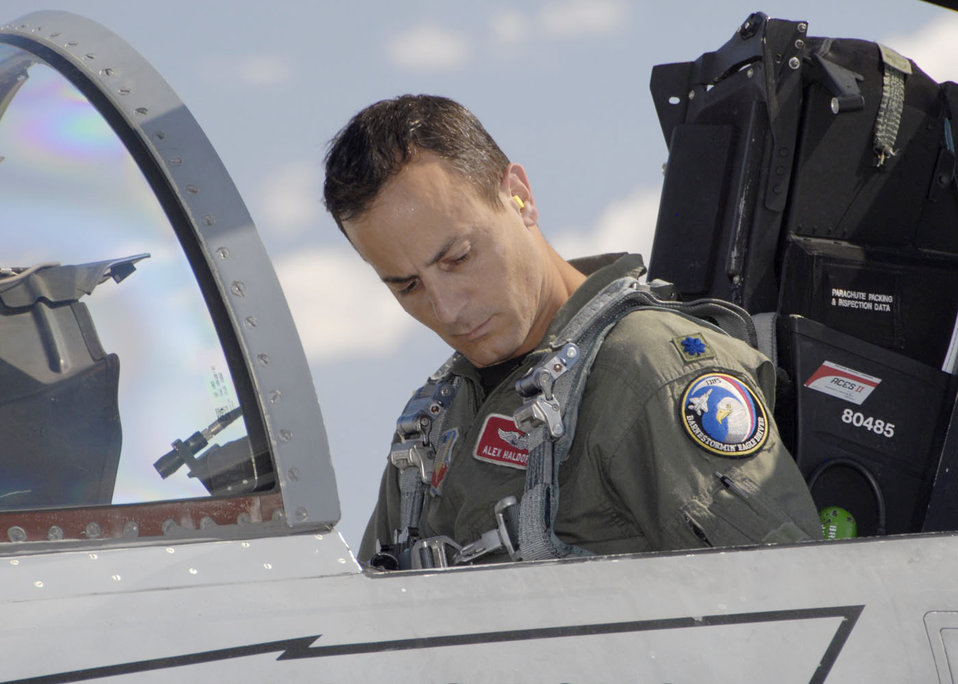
104th Fighter Wing comes to Red Flag

Lt. Col. Alex Haldapolus makes final checks prior to taking off from Nellis Air Force Base, Nev., Aug. 25 for a Red Flag training mission. Red Flag offers pilots and ground crews training in actual wartime scenarios to increase their combat skills. Colonel Haldapolus is an F-15 Eagle pilot with the Massachusetts Air National Guard's 104th Fighter Wing at Barnes Air National Guard Base in Westfield, Mass.